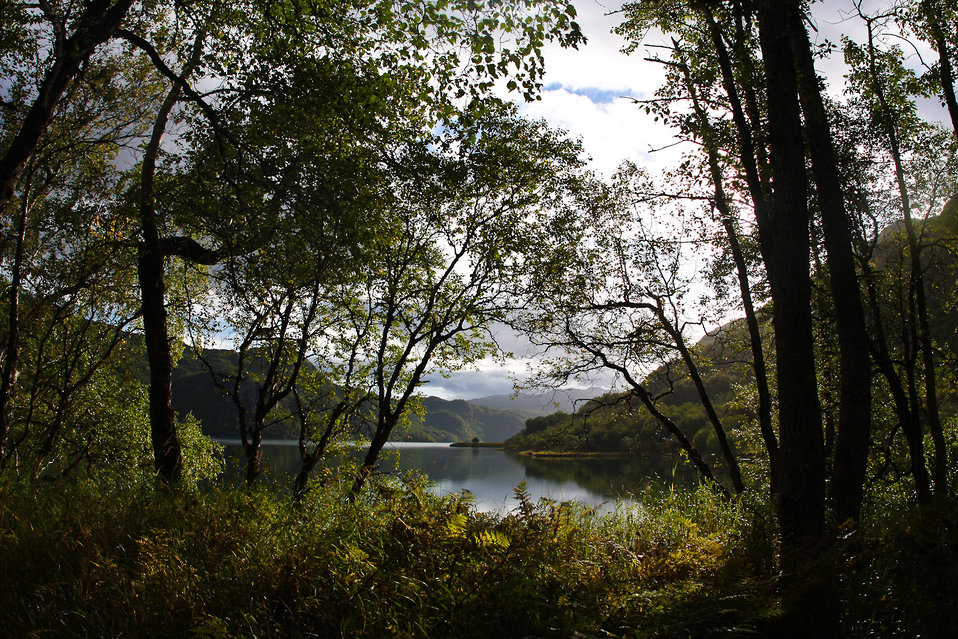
Lower Uganik Lake

Lisa Hupp/USFWS